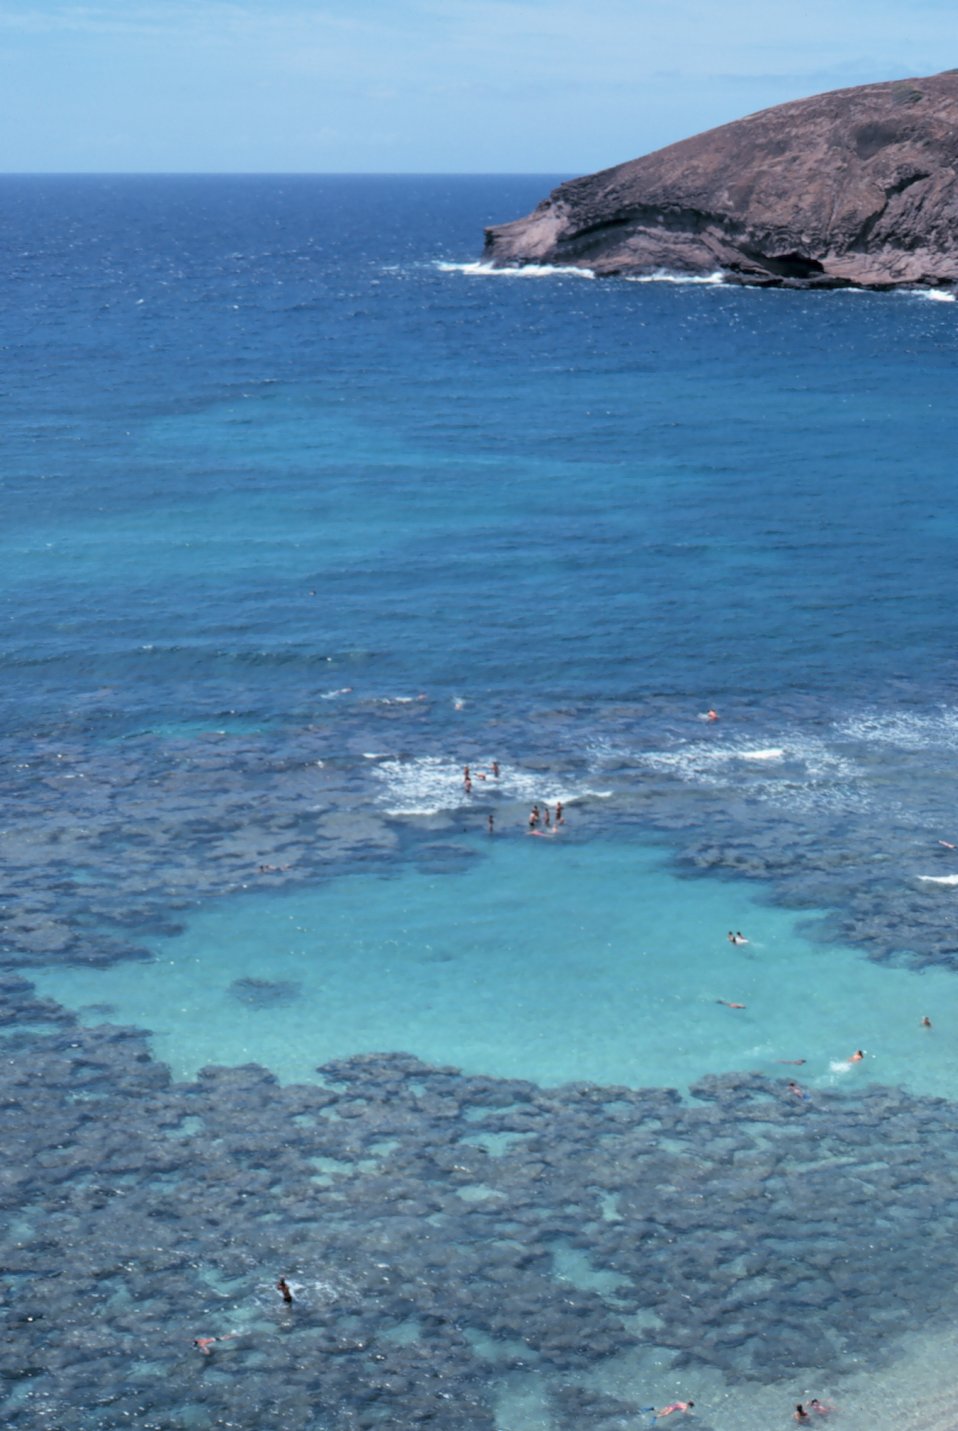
Hanauma Bay, a breached volcanic crater